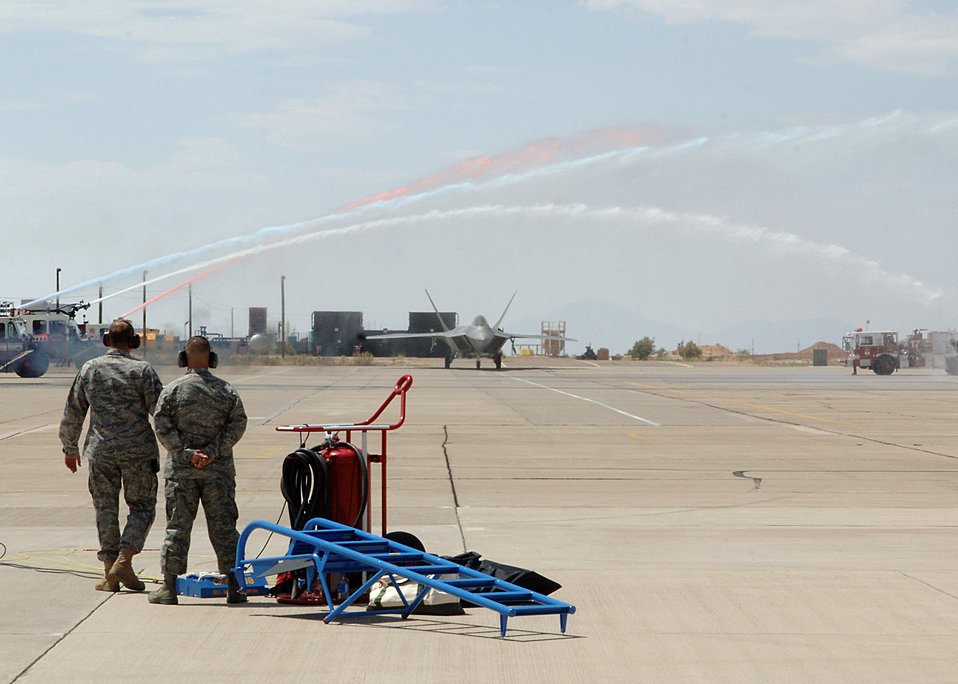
Holloman receives first Raptors

An F-22 Raptor taxis through red, white and blue water streams June 2 at Holloman Air Force Base, N.M., after landing at its new home. Holloman AFB is one of only four bases where the F-22s will be assigned.